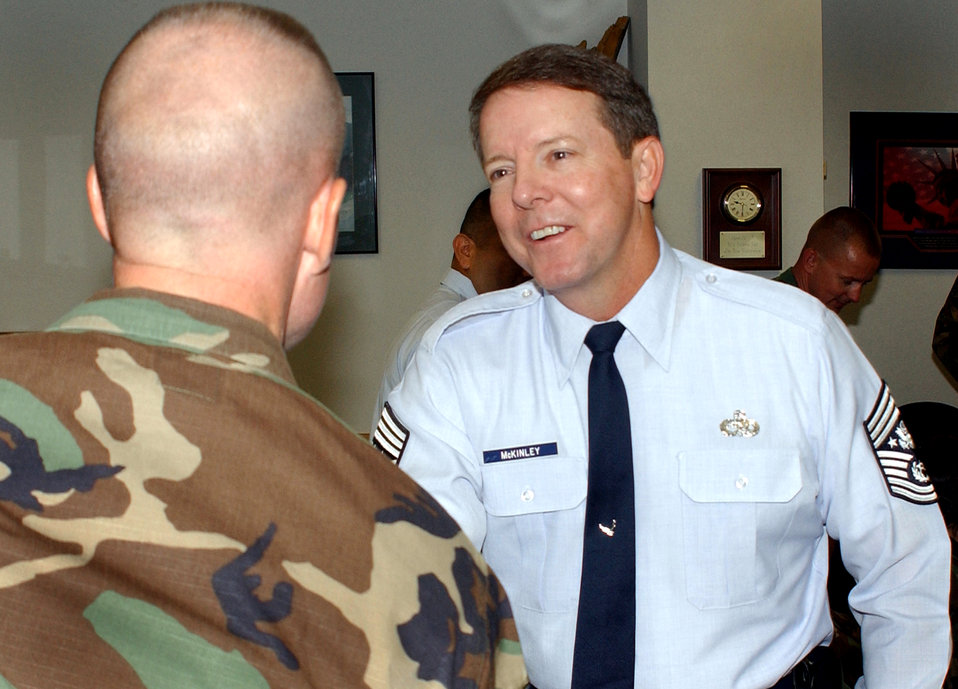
15th CMSAF takes first look at space

Chief Master Sgt. of the Air Force Rodney J. McKinley greets Master Sgt. Michael Owen, 21st Security Force Squadron first sergeant, while visiting the Airman Leadership School at Peterson Air Force Base, Colo. The chief visited the schoolhouse and Headquarters Air Force Space Command July 28.